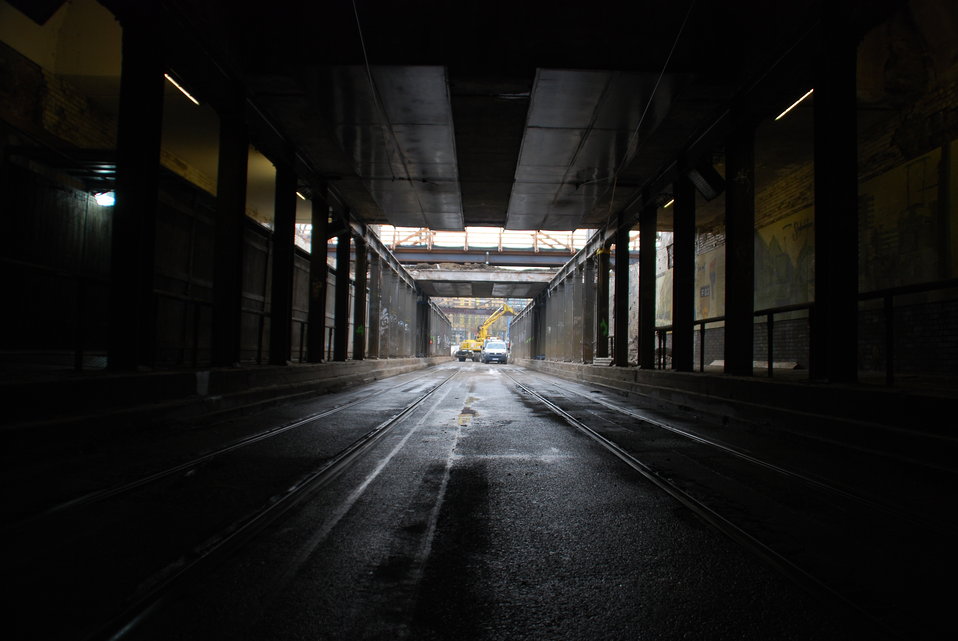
Abriss Bahnhofstunnel Frankfurt (Oder)